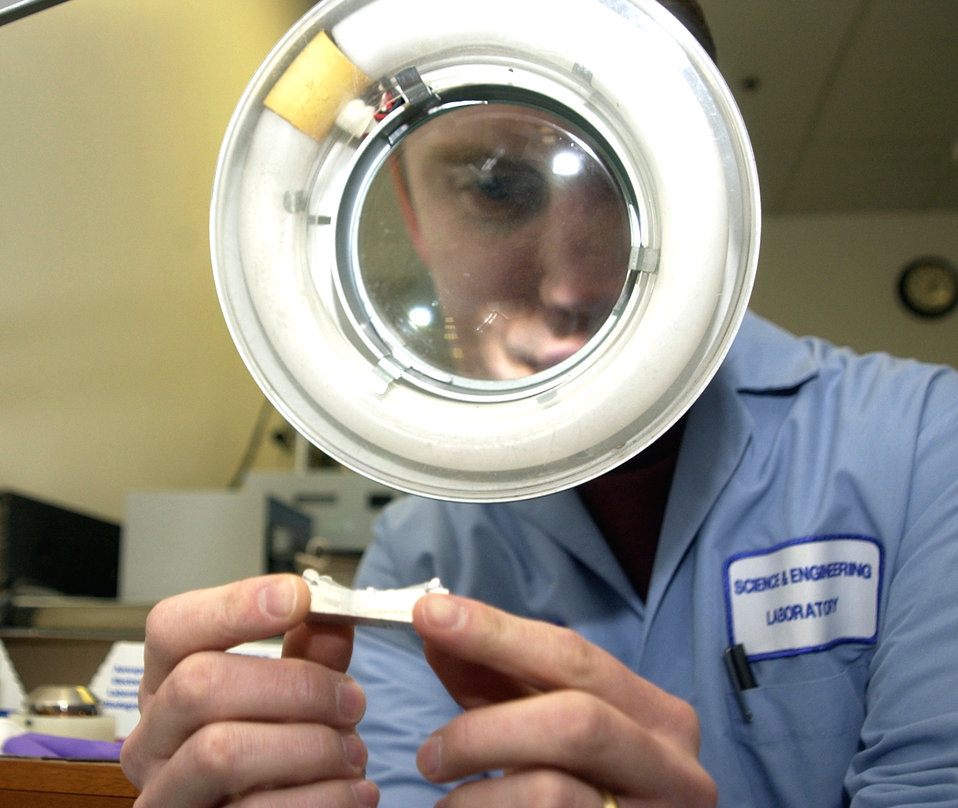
Eye see you

HILL AIR FORCE BASE, Utah -- Dan Farley, a materials engineer, examines a fracture surface of an F-16 Fighting Falcon's main landing gear that failed.